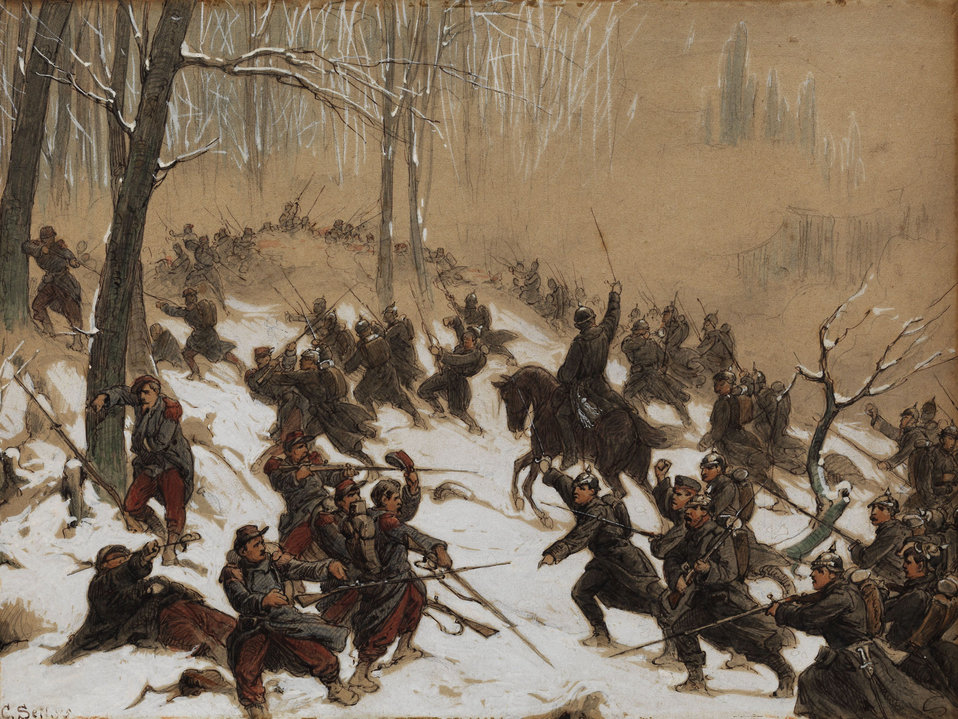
Winterliche Kriegsszene aus dem Krieg 1870–1871. Farbige Gouache auf Karton auf Holz. 19 x 26 cm. Links unten signiert und datiert „(18)95“.